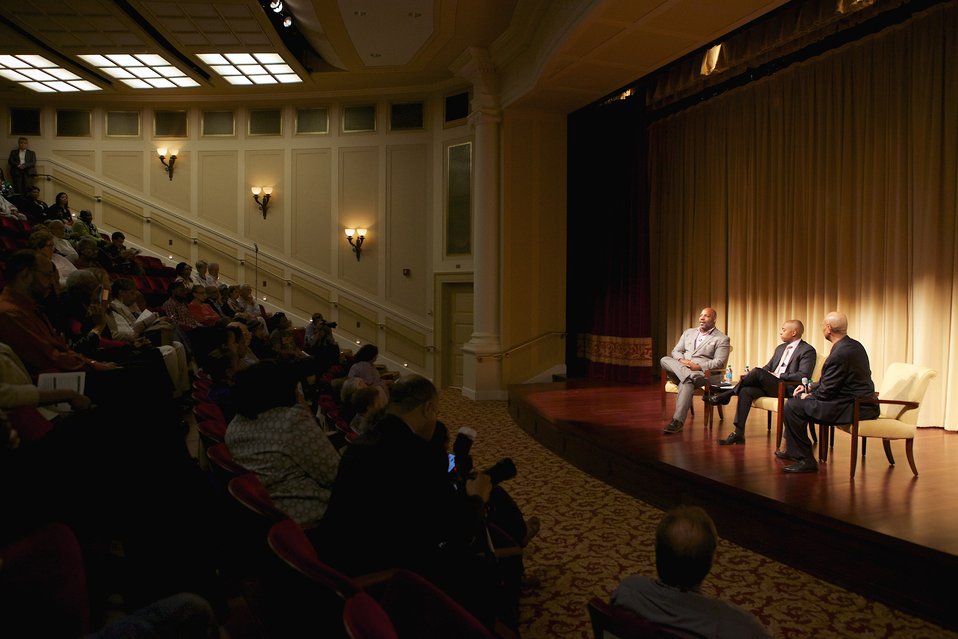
Solomon Northup's Odyssey